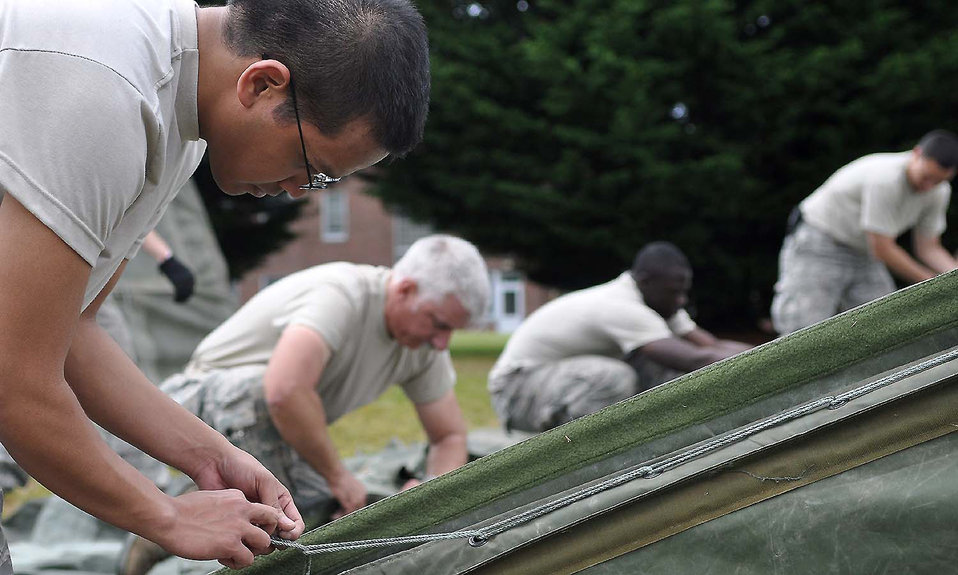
Air Mobility Command Rodeo

Airmen set up tents June 21, 2011, at Joint Base Lewis-McChord, Wash.